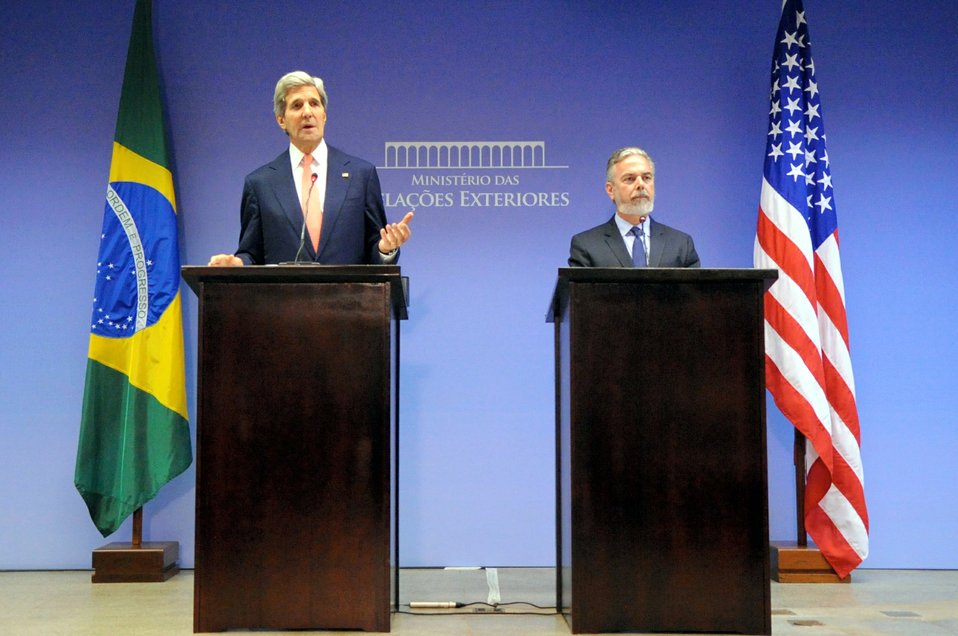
Secretary Kerry and Brazilian Foreign Minister Patriota Address Reporters

U.S. Secretary of State John Kerry and Brazilian Foreign Minister Antonio Patriota address reporters during a joint news conference in Brasilia, Brazil, on August 13, 2013.